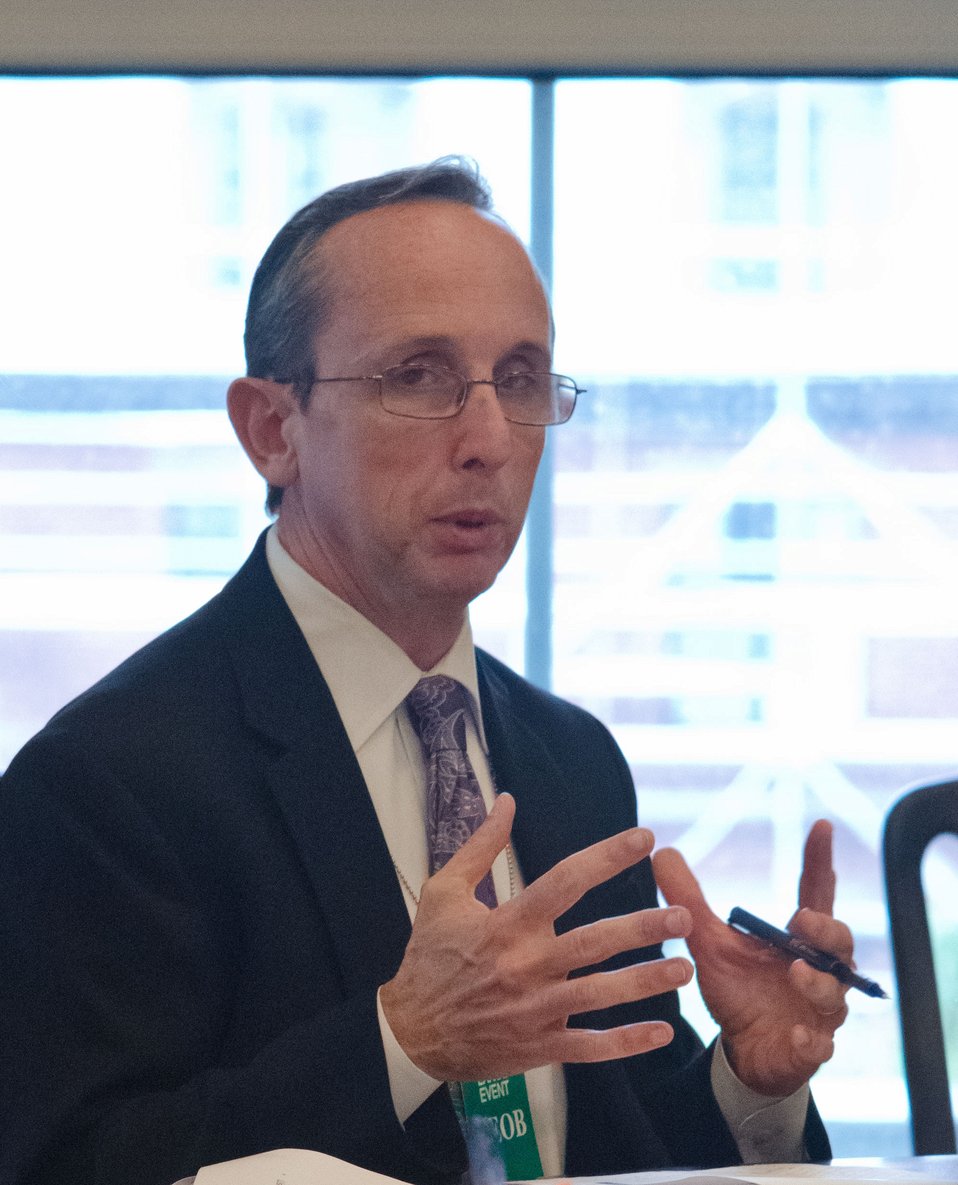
Health Resources and Services Administration Rural Health Policy Associate Administrator Tom Morris speaks during the White House Rural Council chaired by Agriculture Secretary Tom Vilsack at the White House in Washington, D.C. on Friday, Oct. 5, 2012. The White House Rural Council discusses recent White House announcements and Secretary Vilsack asked council members to outline their work plan for the coming months.